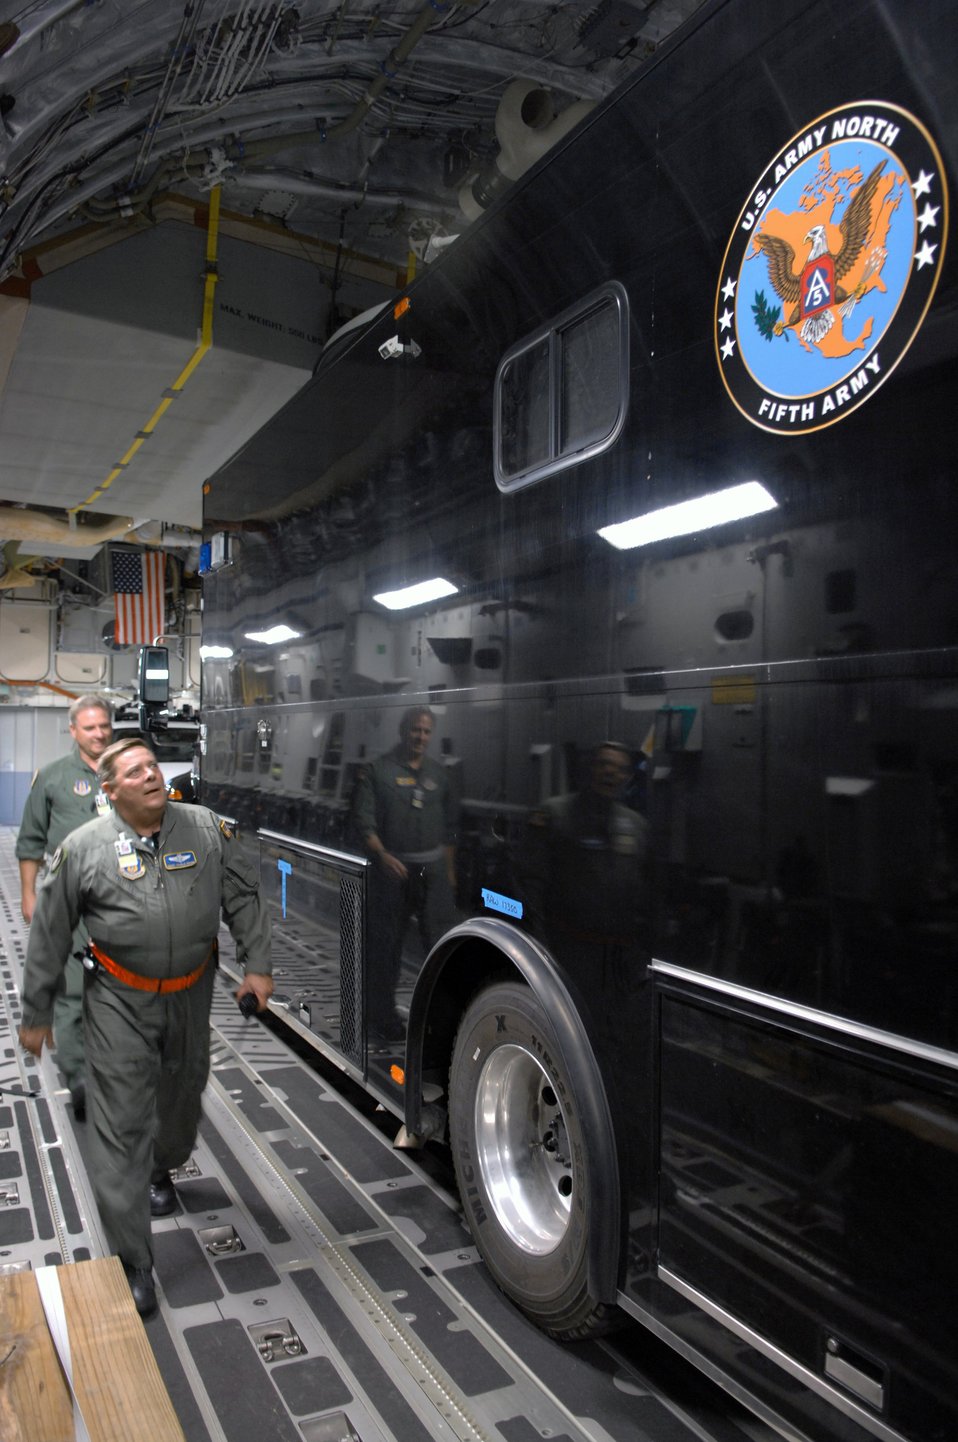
Airmen deliver firefighting support

Airmen inspect U.S. Army North cargo delivered by a 729th Airlift Squadron crew on a C-17 Globemaster III Oct. 24 at March Air Reserve Base, Calif. The U.S. Army North from Fort Sam Houston in San Antonio shipped mobile command center vehicles that will assist command and control efforts of the ongoing relief operations in the aftermath of the California wildfires.